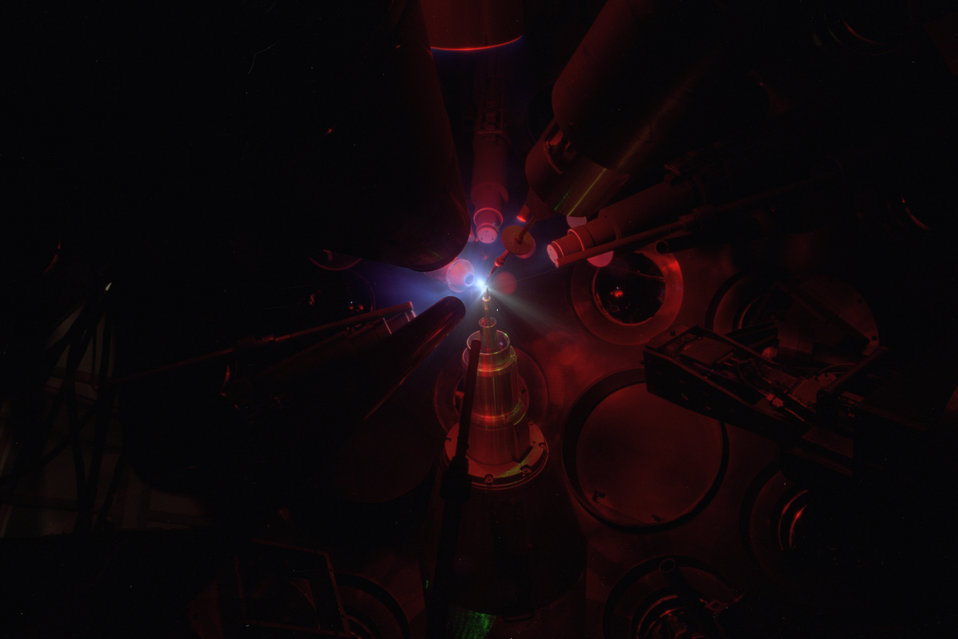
Neutron imaging of cryogenic D2 capsules photo were obtained on Omega for the first time in 2005 in a collaborative experiment with scientists from the Commissariat A L'energie Atomiqe (CEA) in France..

An image taken of the Omega target chamber during a shot shows the plasma fireball created during a cryogenic capsule implosion.